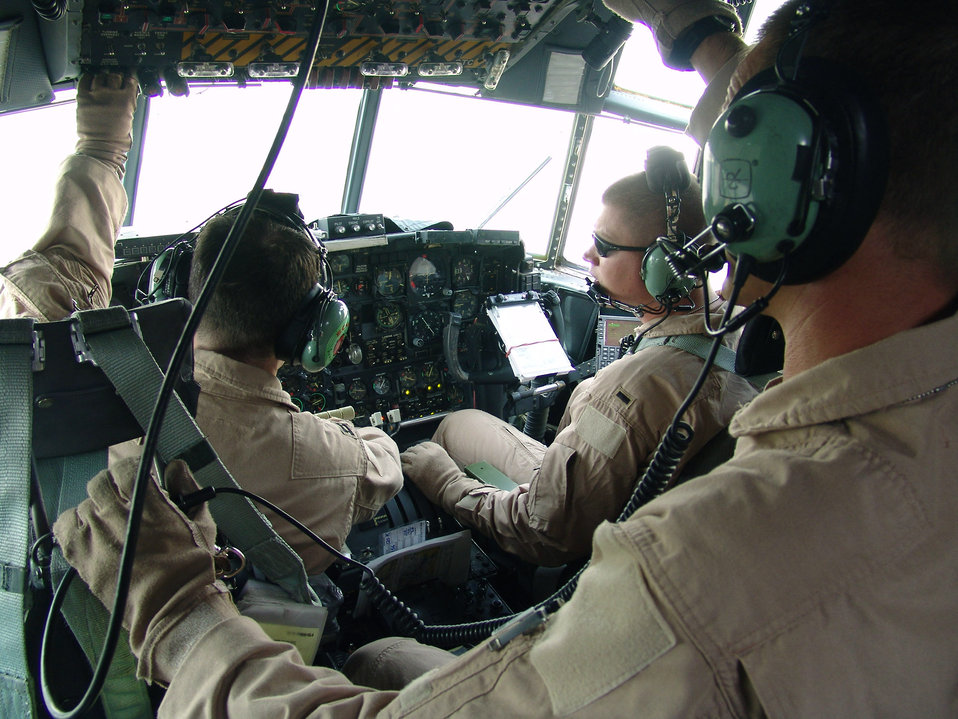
Record-breaking numbers ensure 'boots on the ground'

SOUTHWEST ASIA -- (Clockwise from left) C-130 Hercules pilot Capt. Todd Linton and his co-pilot 1st Lt. Robert Cureton and flight engineer Master Sgt. Gary Corley run through checklists after taking off from a forward-deployed location here Sept. 14. The crew is assigned to the 746th Expeditionary Airlift Squadron and deployed from Ramstein Air Base, Germany.